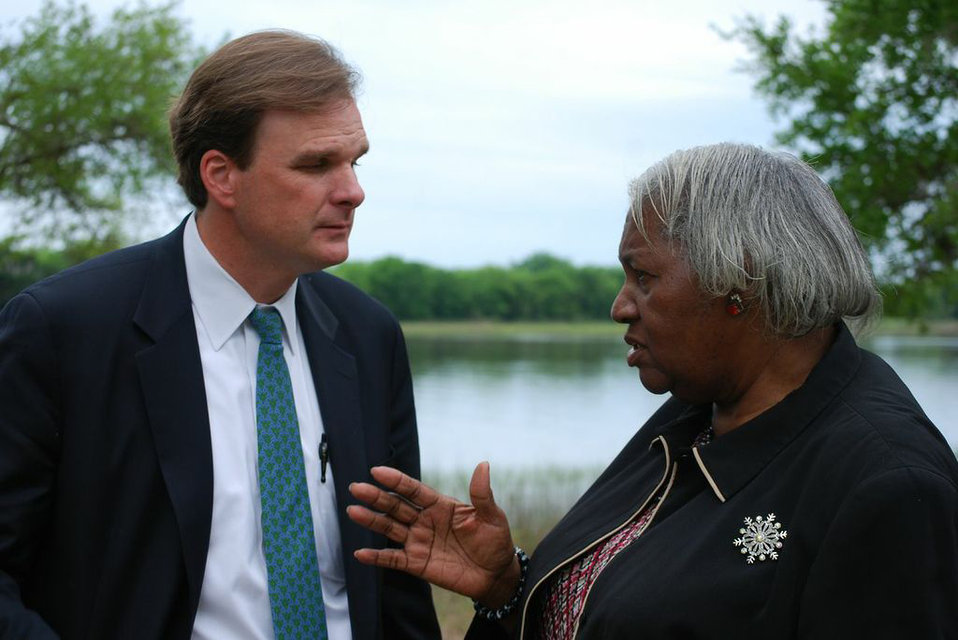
BonnieMary

U.S. Department of Agriculture (USDA) Natural Resources and Environment (NRE)Under Secretary Robert Bonnie listens to retired school superintendent and Center for Heirs’ Property Preservation Sustainable Forestry Program participant Mary Hill.. Hill owns more than 80 acres of land and timber in Berkeley County adjacent to the Francis Marion National Forest.